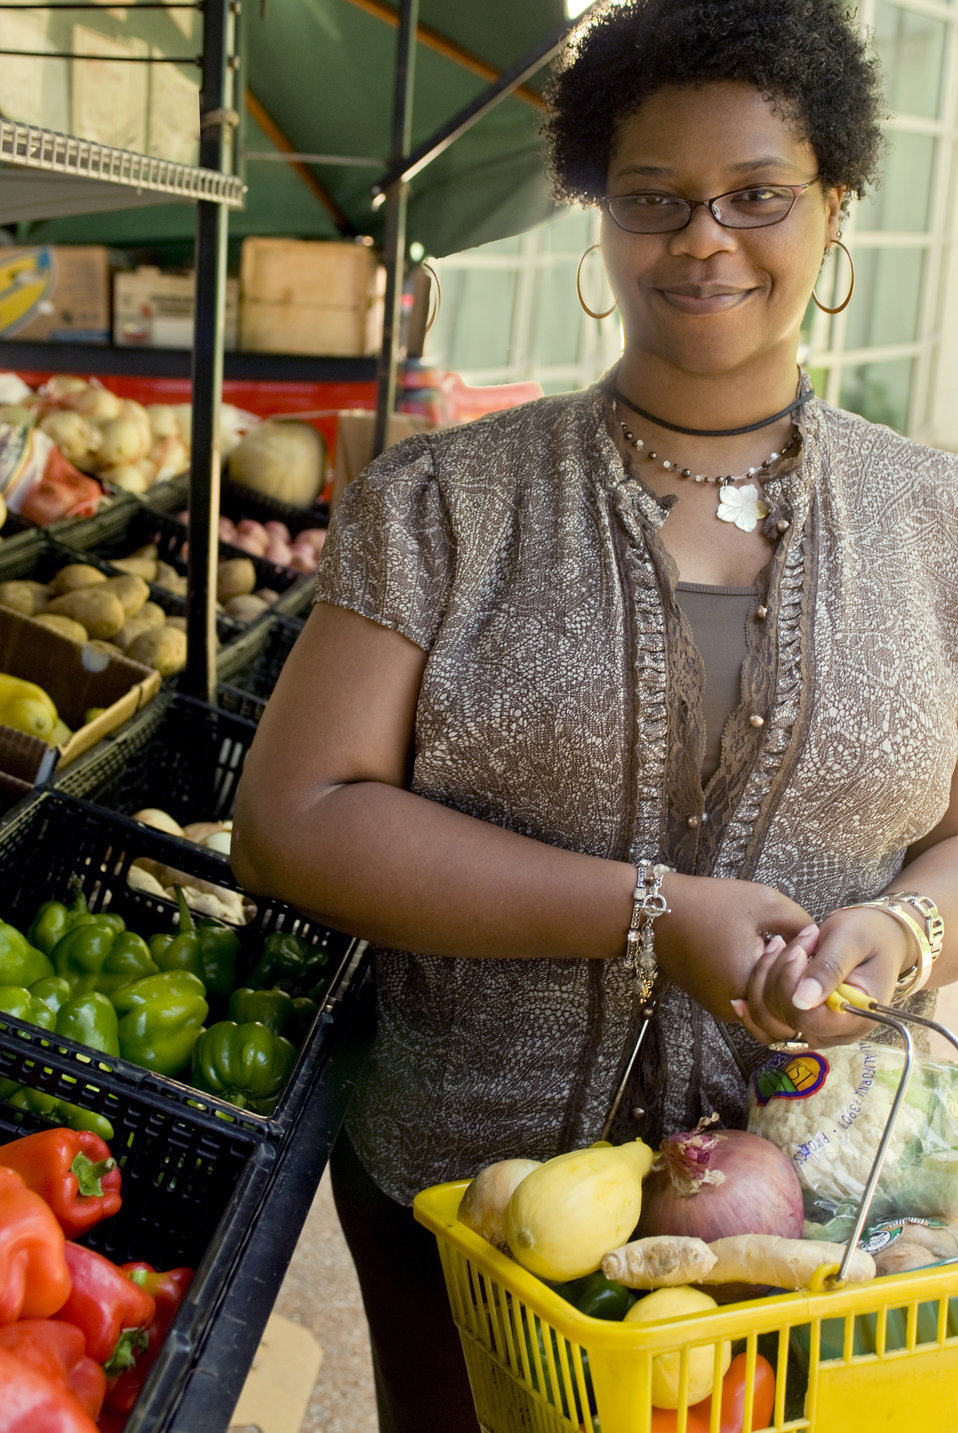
With her shopping basket filled with an array of healthy food choices, this woman had completed her selection process at a mobile produce market. Some of the vegetables she'd placed into her basket included a lemon, a head of cauliflower, a purple and a white onion, ginger root, and a variety of bell peppers.